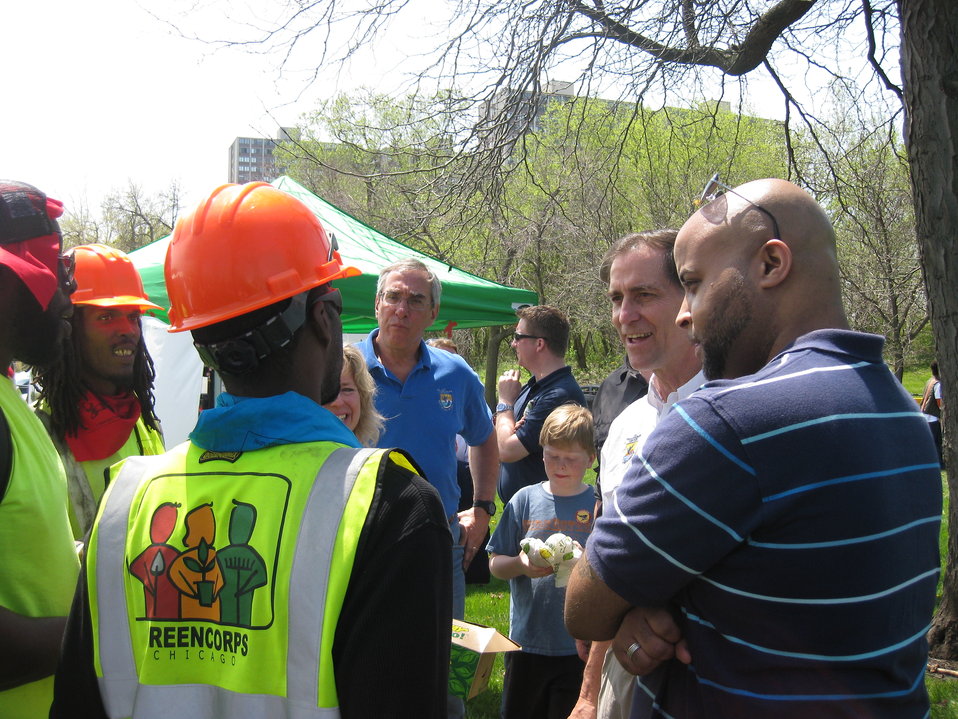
Dan Ashe, Tom Melius and Kevin Davis meet Greencorps

Chicago Park District Burnham Corridor Community Planting Day
May 10, 2014
Photo by USFWS; Louise Clemency